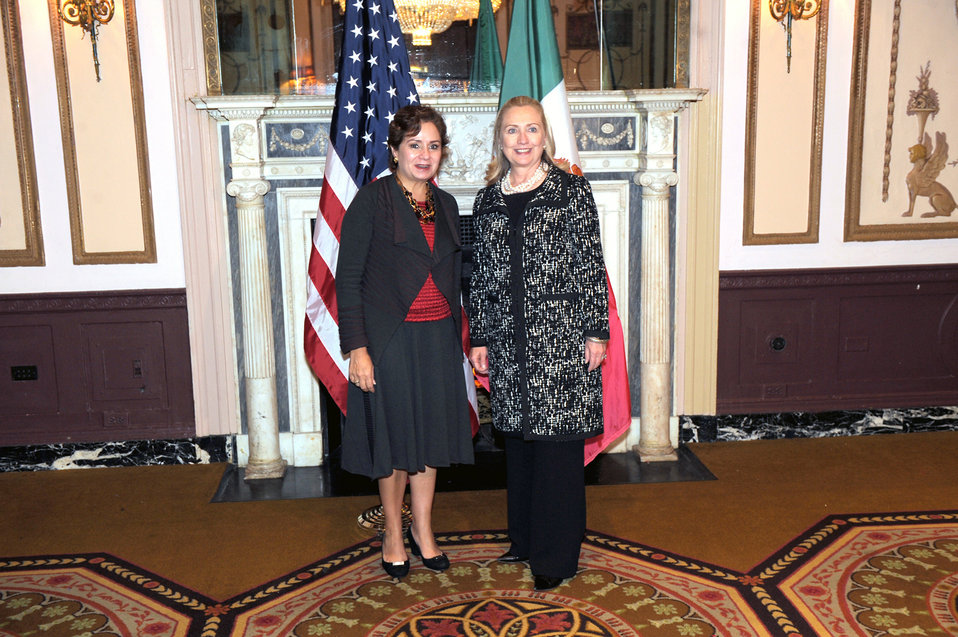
Secretary Clinton Meets With Mexican Foreign Secretary Espinosa

U.S. Secretary of State Hillary Rodham Clinton meets with Mexican Foreign Secretary Patricia Espinosa at the Waldorf Astoria in New York, New York, on September 23, 2011.